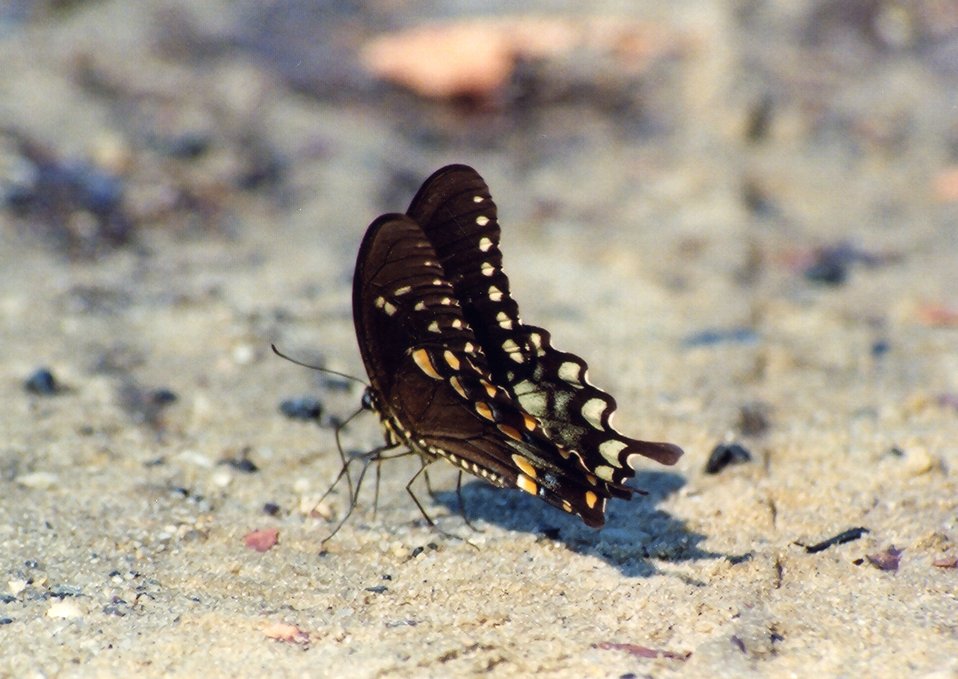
Butterfly on the beach.